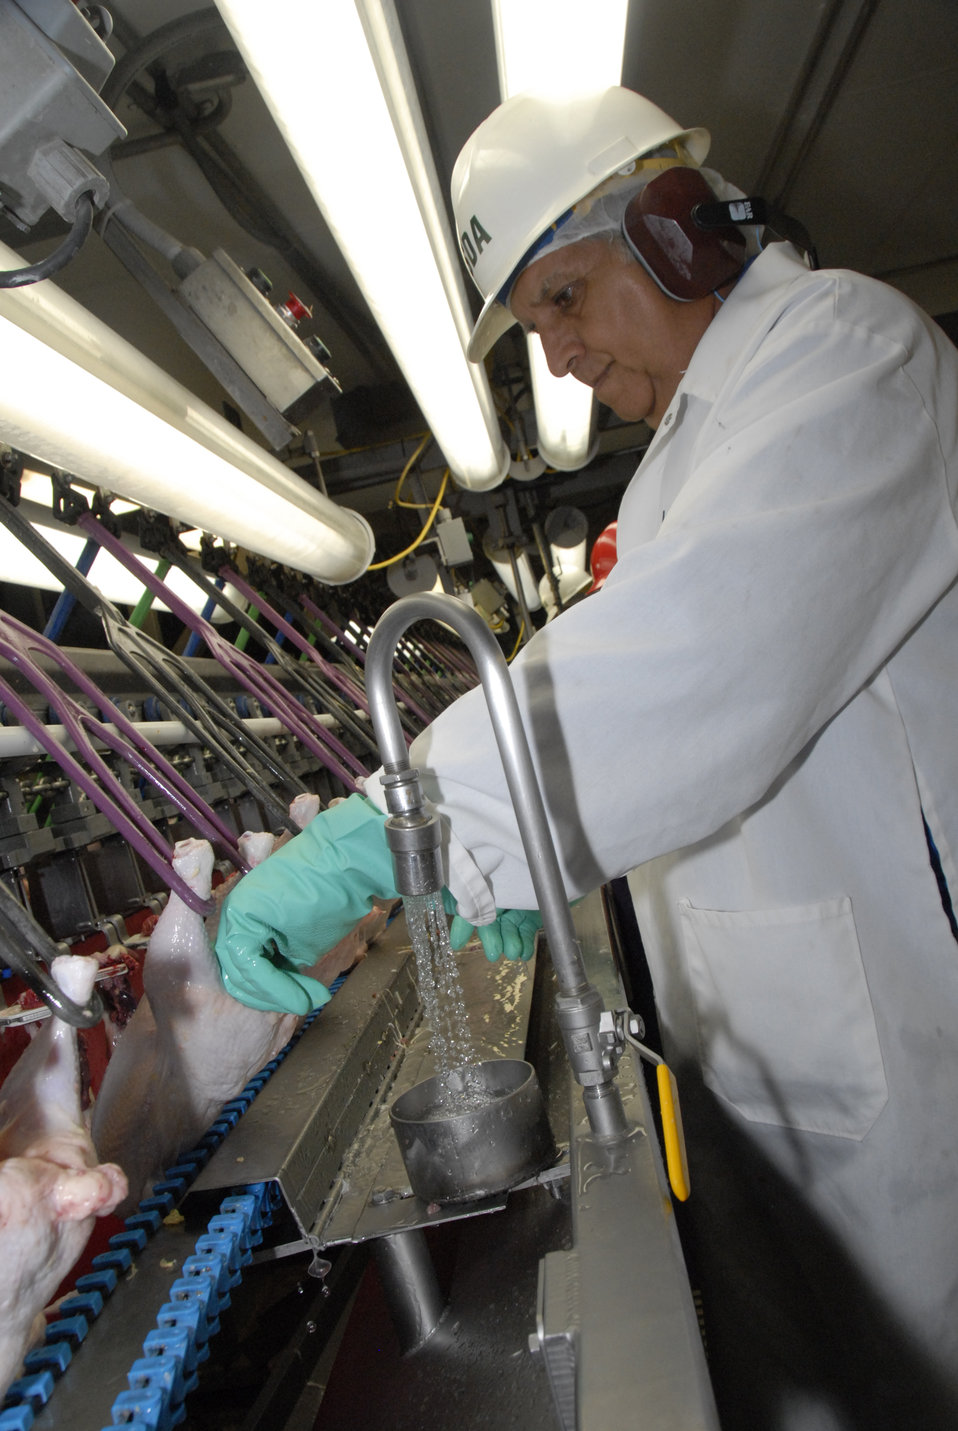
U.S. Department of Agriculture (USDA) Food Safety and Inspection Service (FSIS) inspectors examine chickens at the Holmes poultry slaughterhouse in Nixon, Texas on June 10, 2008.